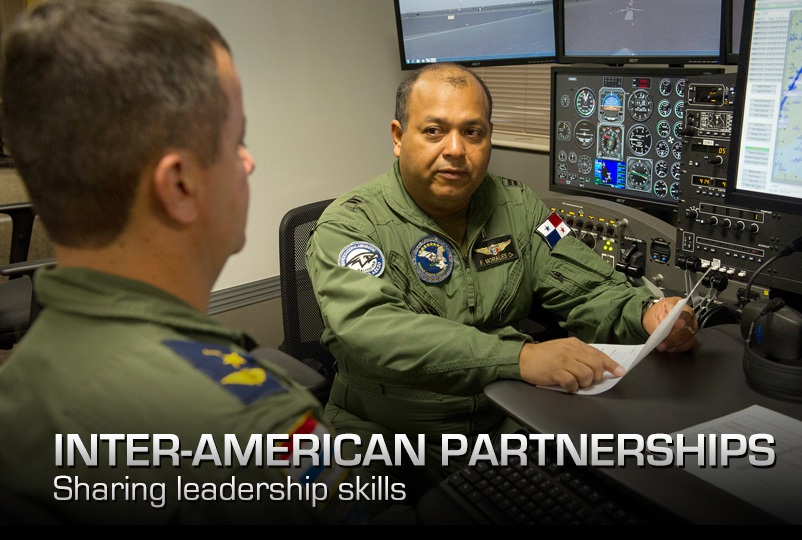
Inter-American partnerships